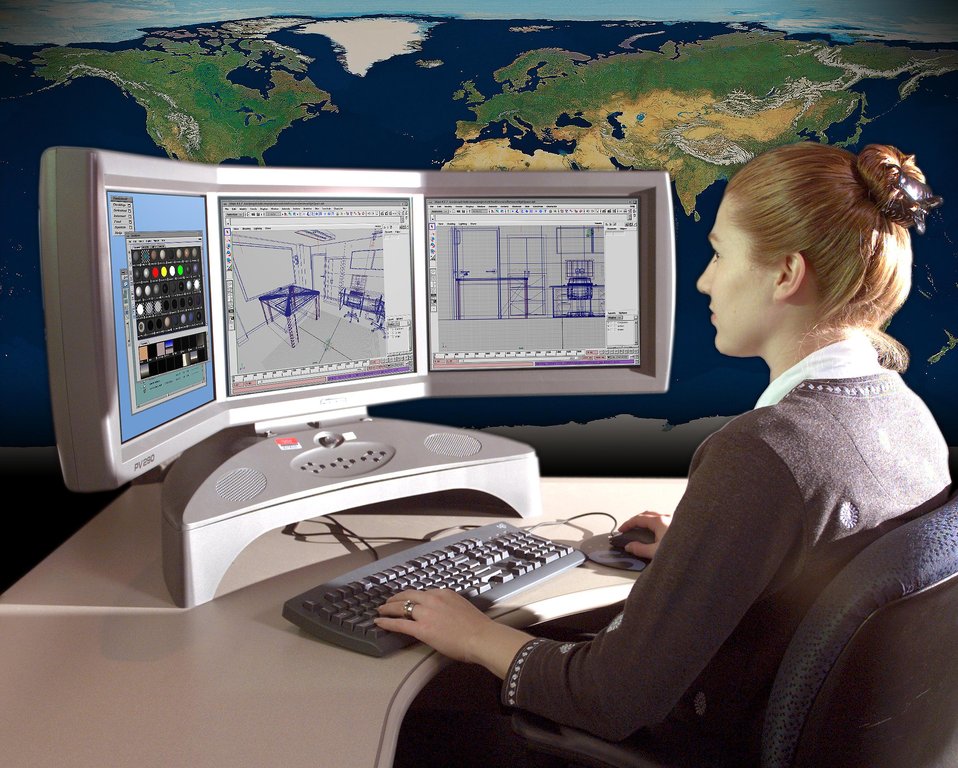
PACIFIC NORTHWEST NATIONAL LABORATORY ENGINEER OF COMPUTER SCIENCE.

PNNL ENGINEERS DESIGN NETWORK SOLUTIONS FROM SMALL LOCAL AREA NETWORKS TO GLOBAL INTERNETS.